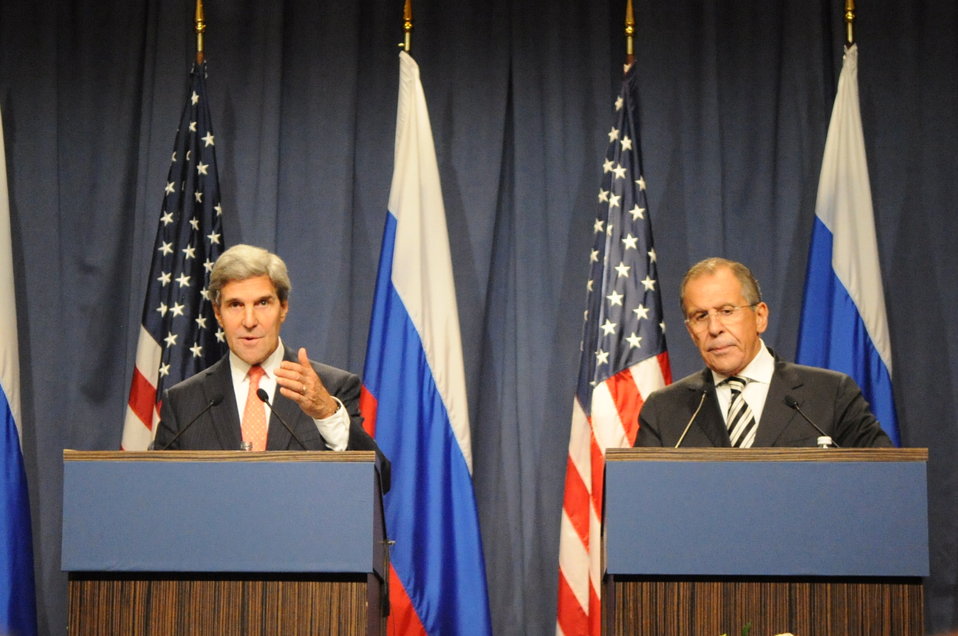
Secretary Kerry, Russian Foreign Minister Lavrov Speak to Reporters

12:43 p.m., September 14, 2013 - U.S. Secretary of State John Kerry and his Russian counterpart, Foreign Minister Sergey Lavrov, speak to reporters at the Hotel Intercontinental in Geneva, Switzerland, after reaching an agreement to eliminate Syrian chemical weapons.